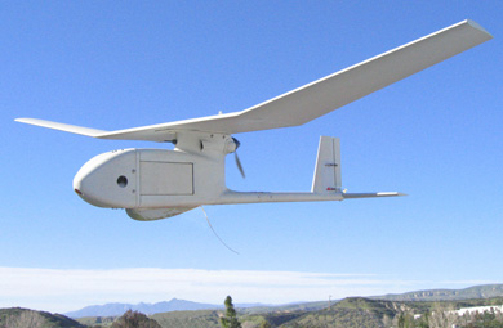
RQ-11 Raven

The RQ-11 Raven Small Unmanned Aircraft System in flight.